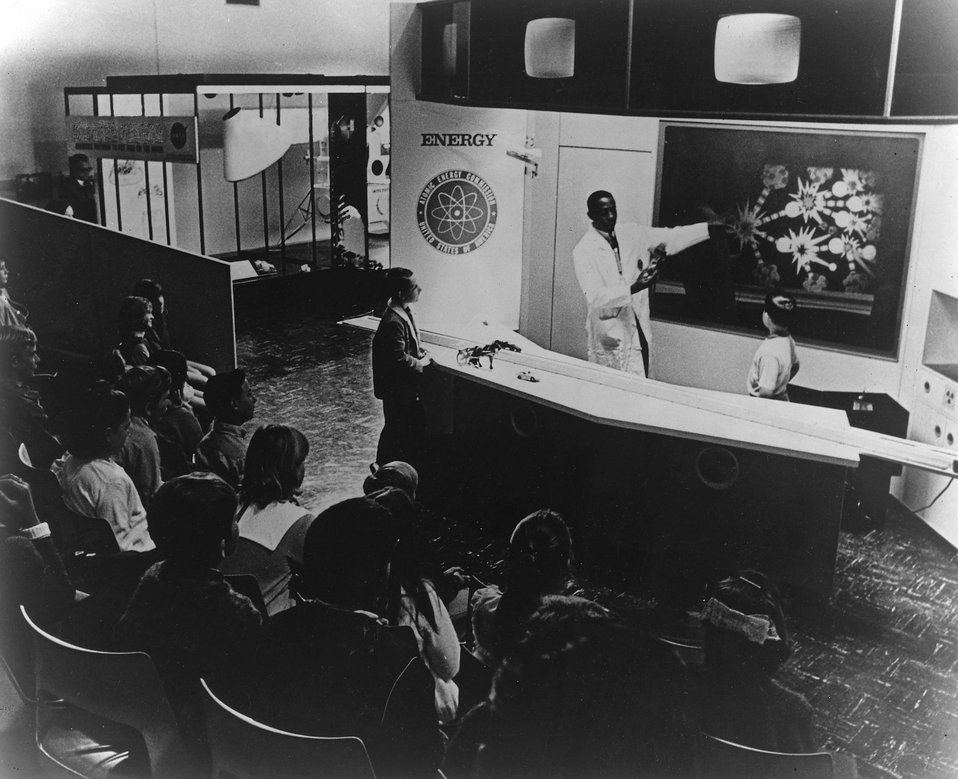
Part of the new AEC exhibit, 'Energy,' which is designed specifically for extended presentations at major U.S. museums, is shown in this photo as it was situated in the San Francisco Palace of Arts and Sciences. c. 1970